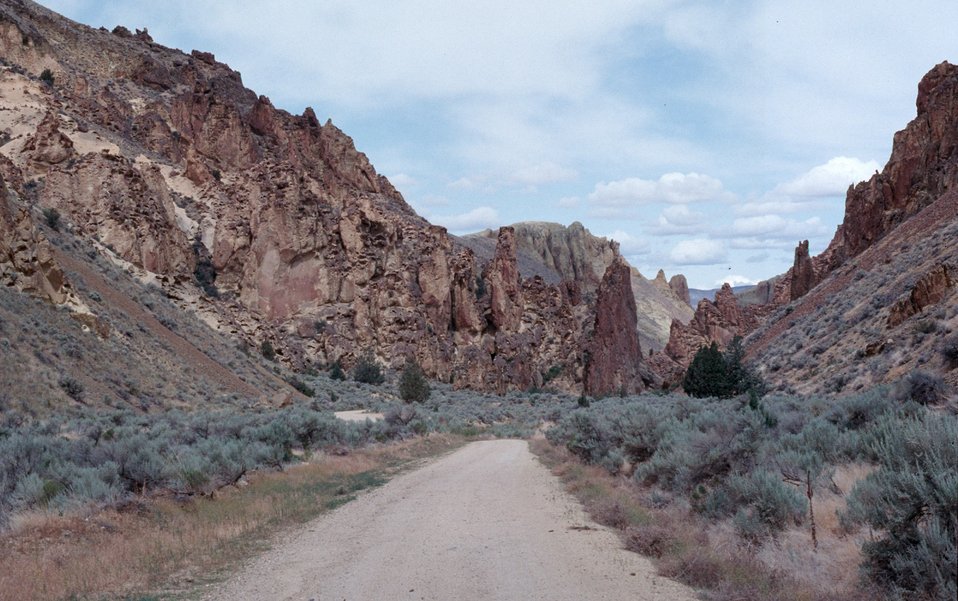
Leslie Gulch Owyhee Field Office LSRD Lower Snake River District